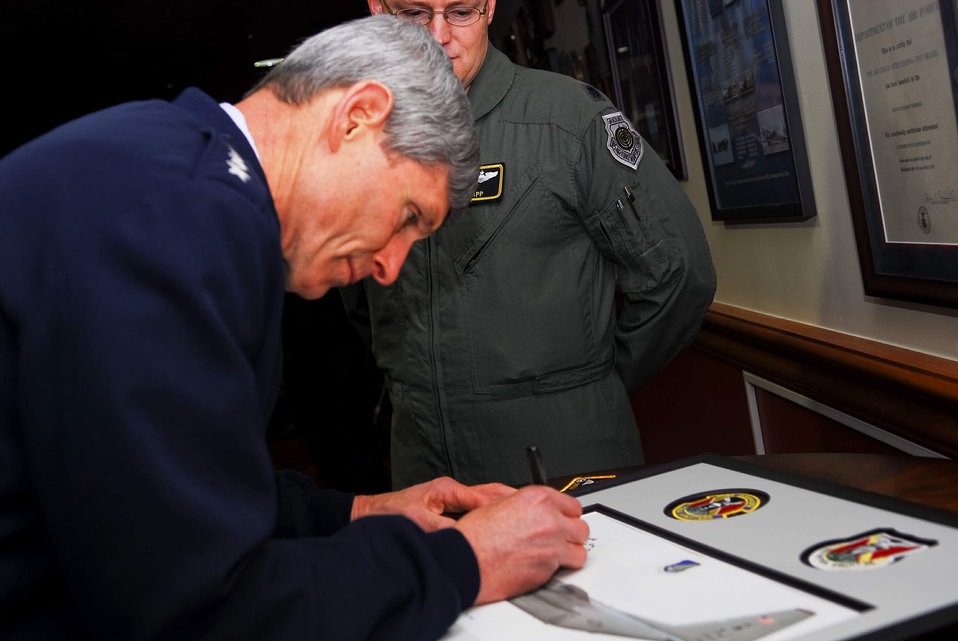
Gen. Schwartz visits Yakota AB

Air Force Chief of Staff Gen. Norton Schwartz signs a lithograph for the 36th Airlift Squadron during a visit to Feb. 8, 2011, at Yokota Air Base. General Schwartz visited Airmen to discuss issues affecting the Air Force in 2011.